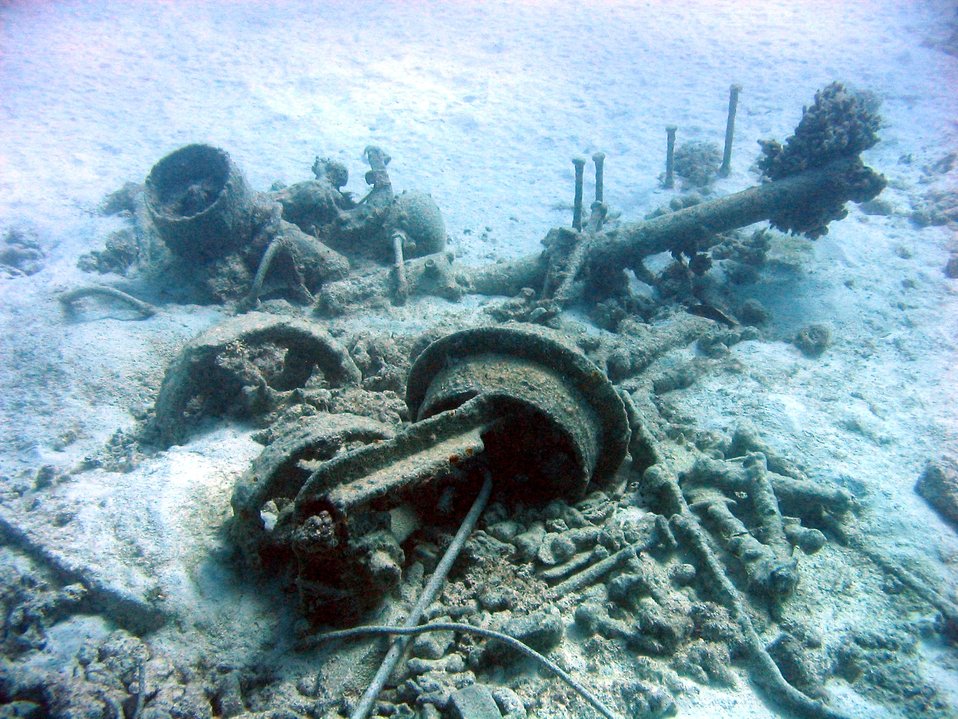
Debris from early Twentieth Century wreck on Pearl and Hermes Reef. Inside the atoll.